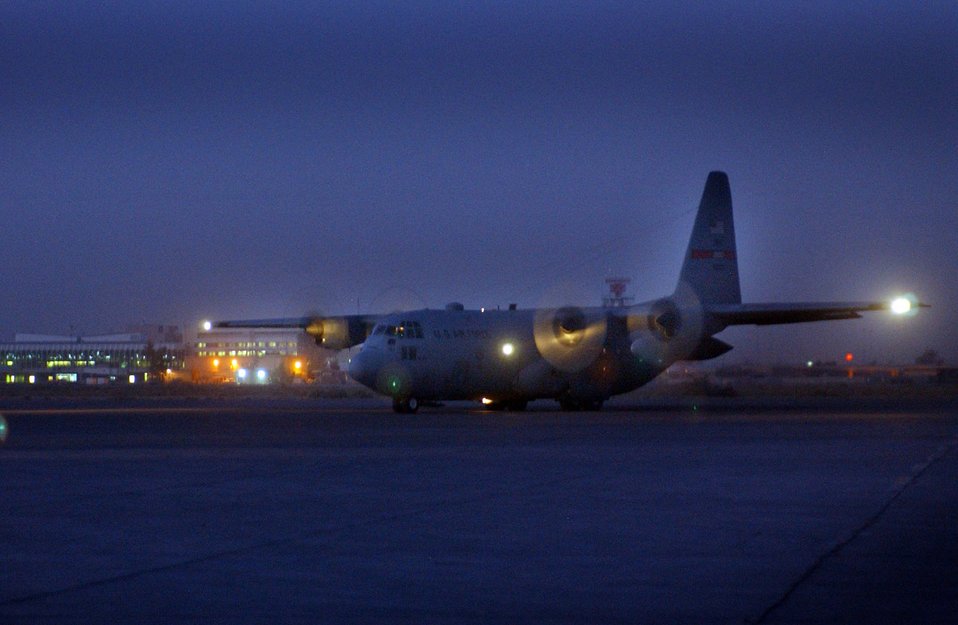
Fuel stop

BAGHDAD, Iraq -- A C-130 Hercules deployed from Dyess Air Force Base, Texas, taxis for takeoff. The aircraft was on the ground here less than an hour as it fueled up and swapped out passengers before continuing on its next mission supporting Operation Iraqi Freedom.